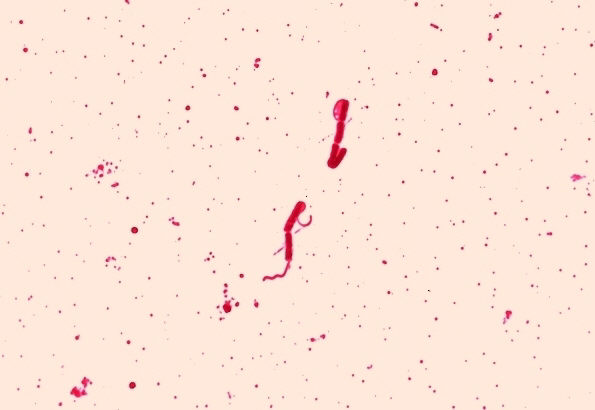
Pseudomonas pseudoalcaligenes. Leifson flagella stain (digitally colorized).